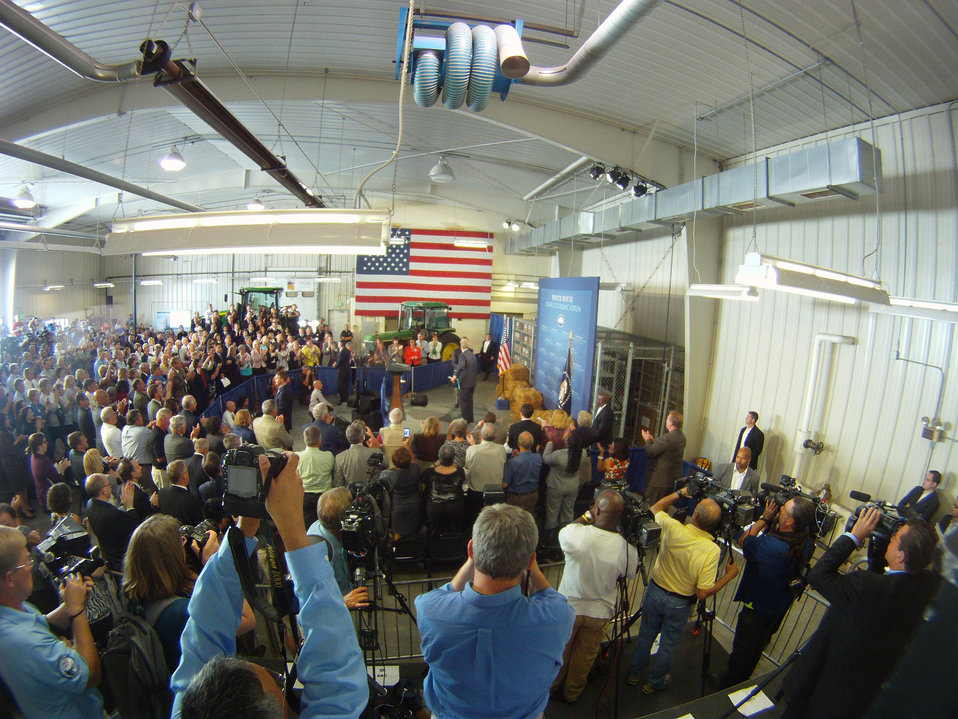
Agriculture Secretary Tom Vilsack introduces President Barack Obama at the Northeast Iowa Community College, for a White House Rural Economic Forum on Tuesday, Aug. 16, 2011. The President’s visit would focus on agriculture’s contribution to the national economy, and how to create more jobs in rural America.